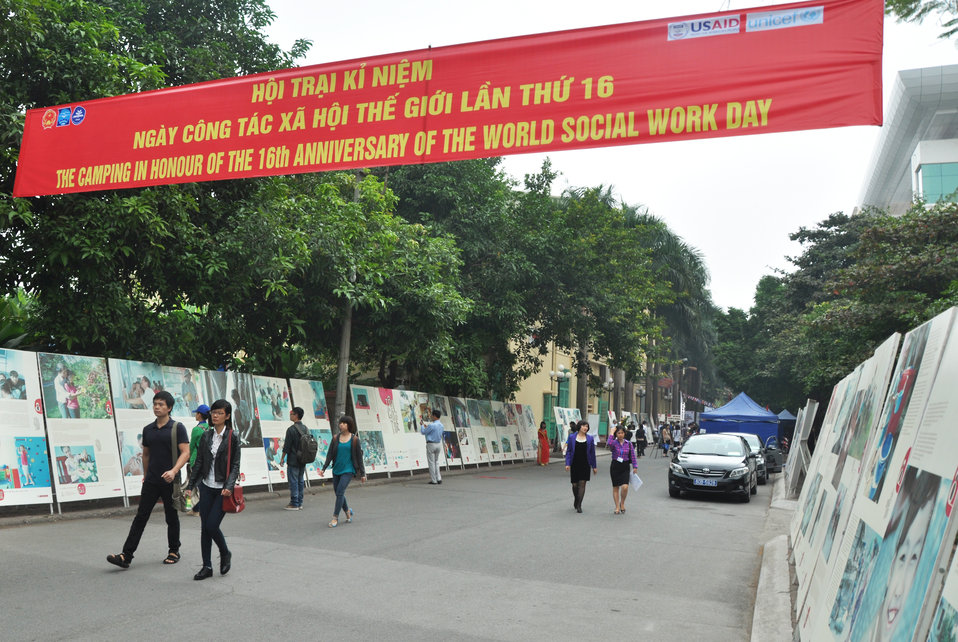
16th Anniversary of the World Social Work Day in Hanoi

Hanoi, November 8, 2013.